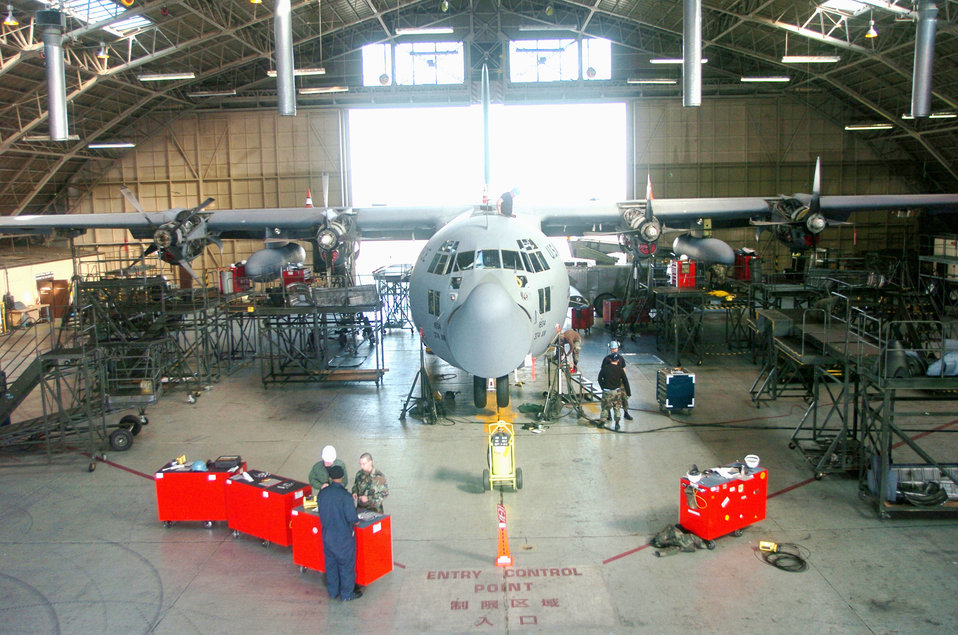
Yokota isochronal Airmen keep Pacific fleet healthy

YOKOTA AIR BASE, Japan -- Airmen from the 374th Maintenance Squadron here conduct a major annual inspection on a C-130 Hercules. The mechanics ensure the Pacific Air Force C-130 fleet is in top condition. Each inspection lasts about two weeks.